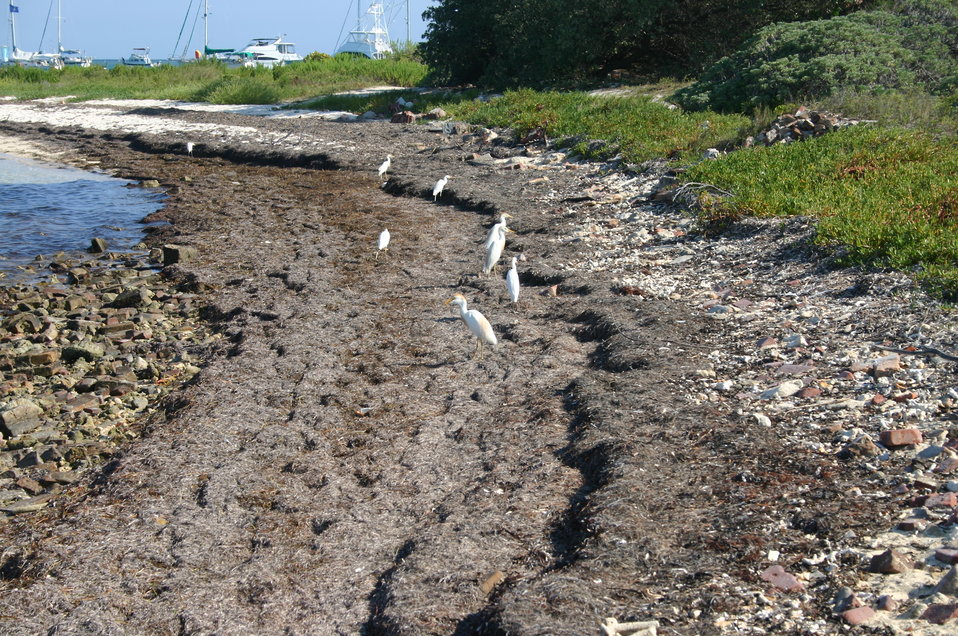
Egrets looking for dinner.